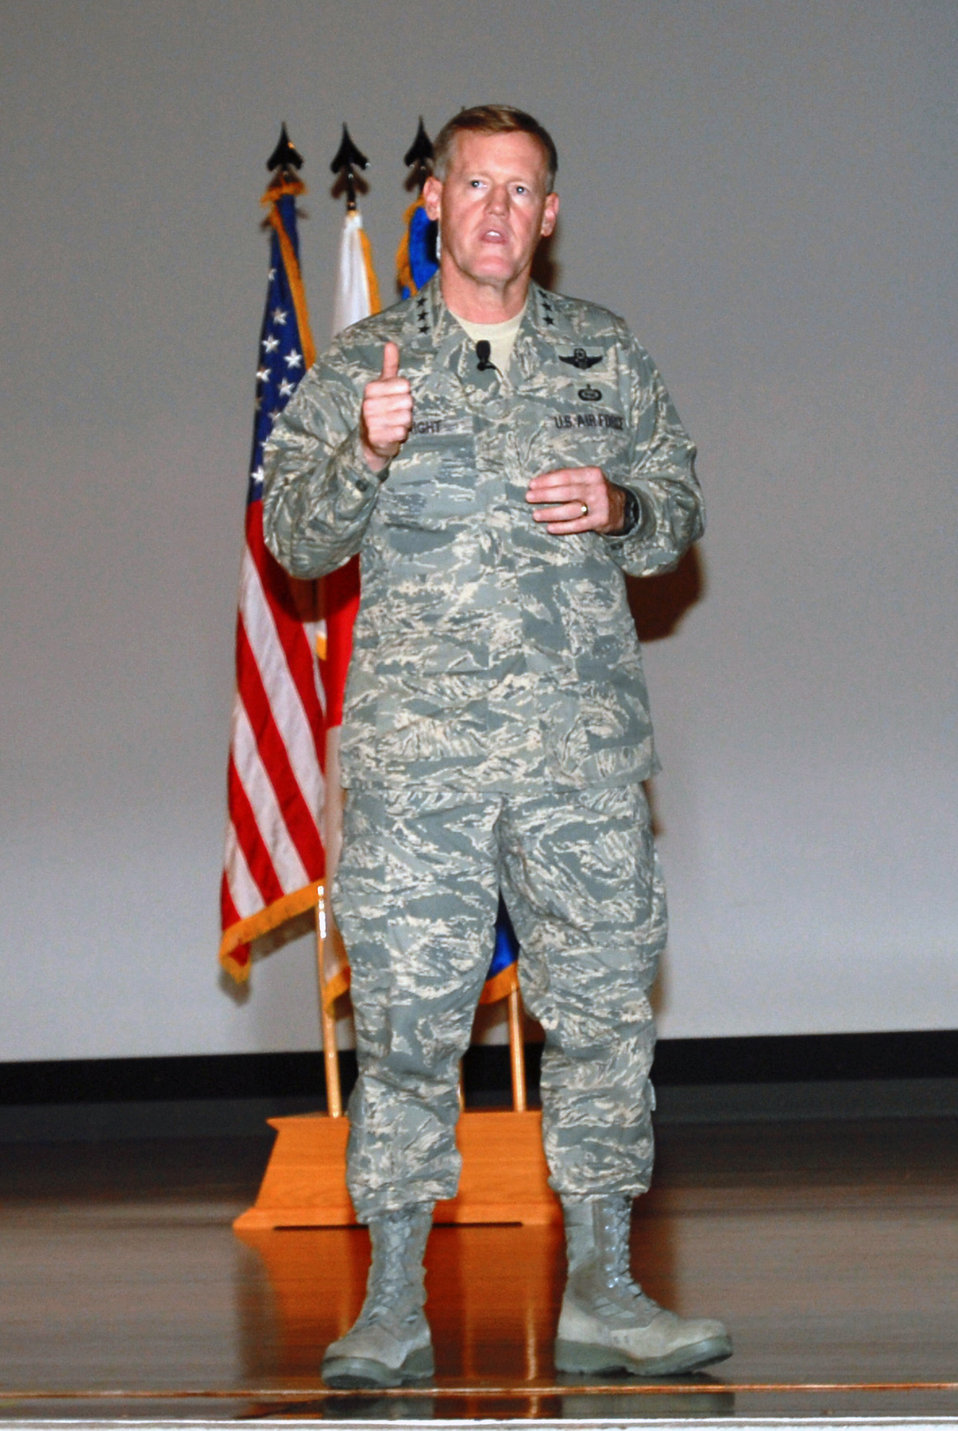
U.S. Forces Japan commander emphasizes military leaders' role

Lt. Gen. Bruce A. Wright speaks to field grade officers and senior enlisted leaders of all four services at a forum Sept. 27 at Kadena Air Base, Japan. General Wright is the U.S. Forces Japan and 5th Air Force commander.